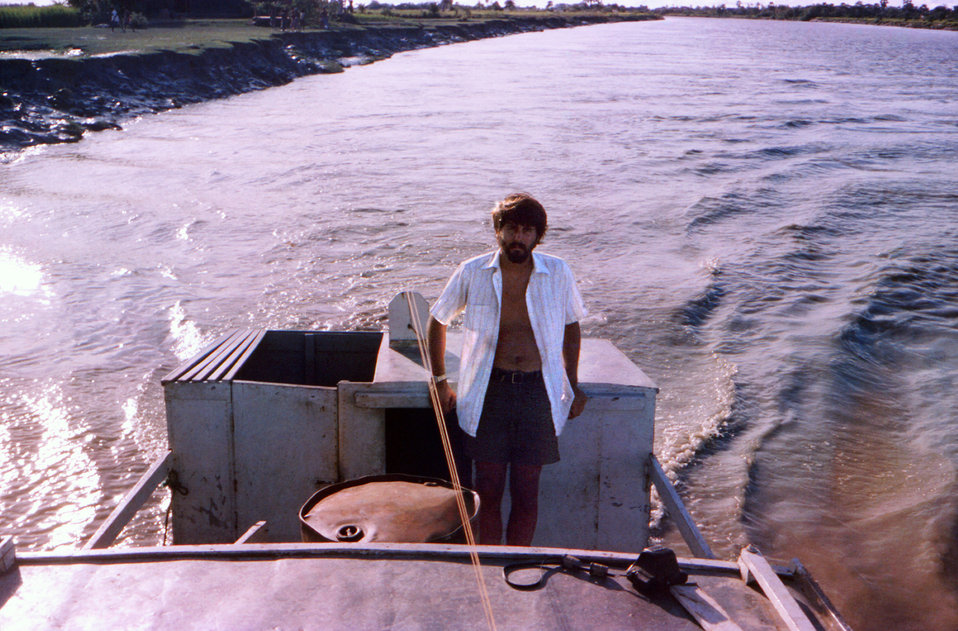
This October, 1975 photograph depicted smallpox eradication team member, David Forney (U.S.A.), while standing at the stern of a 'UNICEF 8' boat, on a Patuakhali District waterway, At the time, Mr. Forney was a CDC Public Health Advisor, who was on loan to the World Health Organization (WHO) Smallpox Eradication Program.